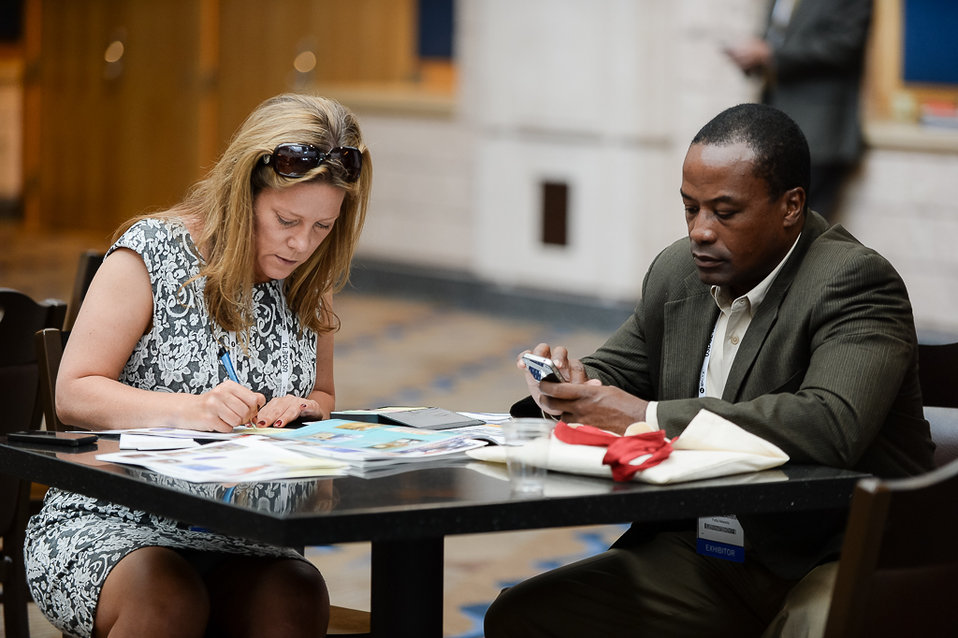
OSDBU Conf 13